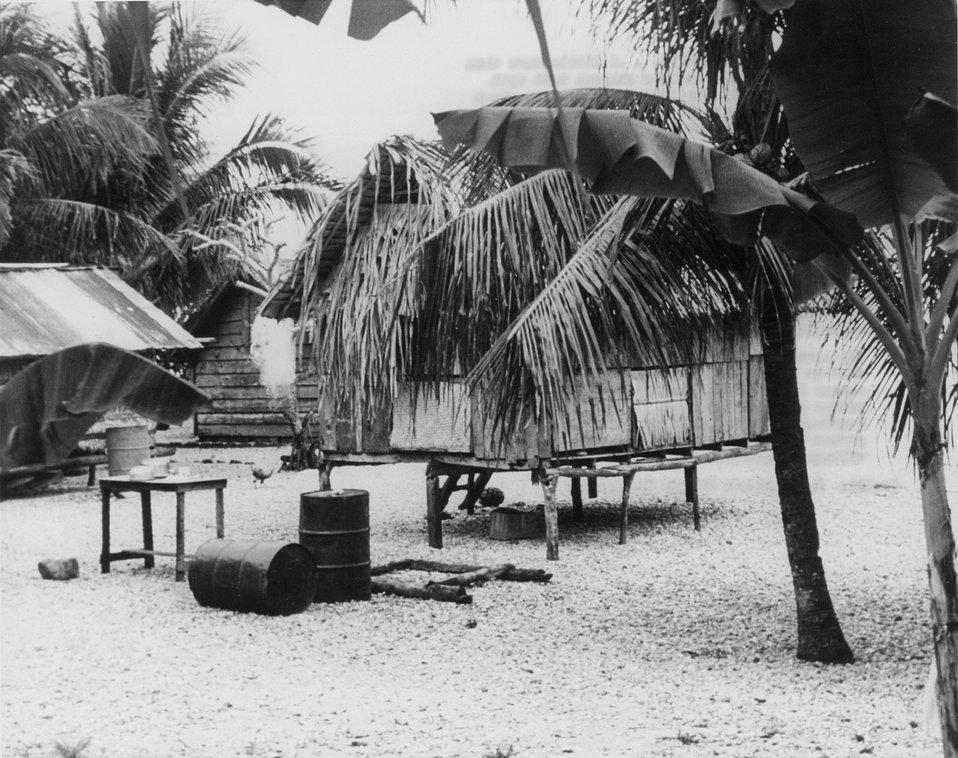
Bikini Atoll, ten years after nuclear testing inhabits allowed to return home.